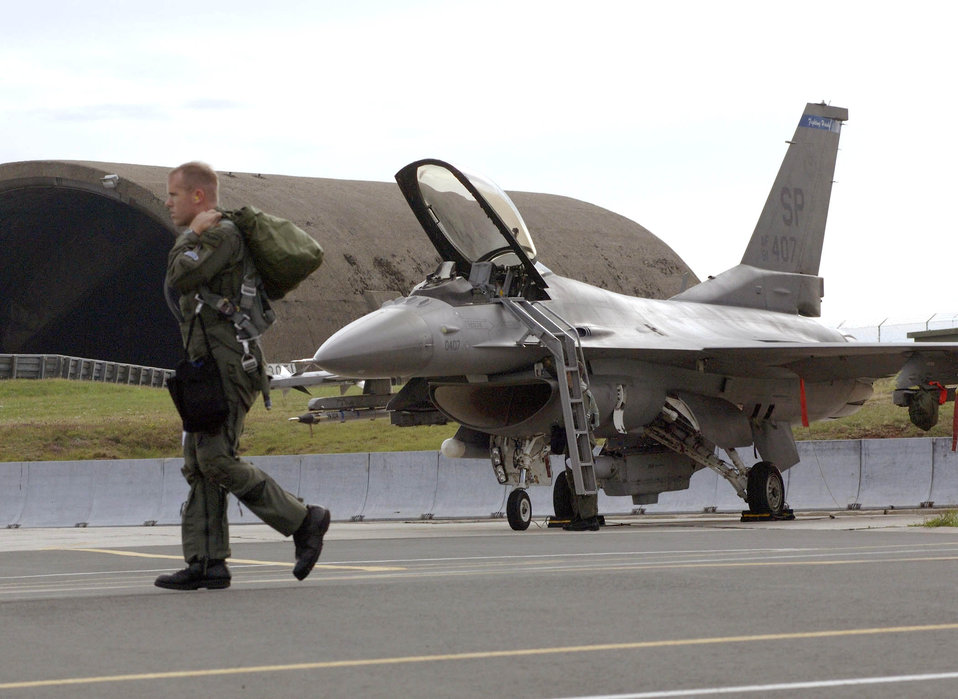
Mission complete

SPANGDAHLEM AIR BASE, Germany -- Maj. Richard Murray heads for base ops after completing a mission here July 27. He is an F-16 Fighting Falcon pilot with the 23rd Fighter Squadron.